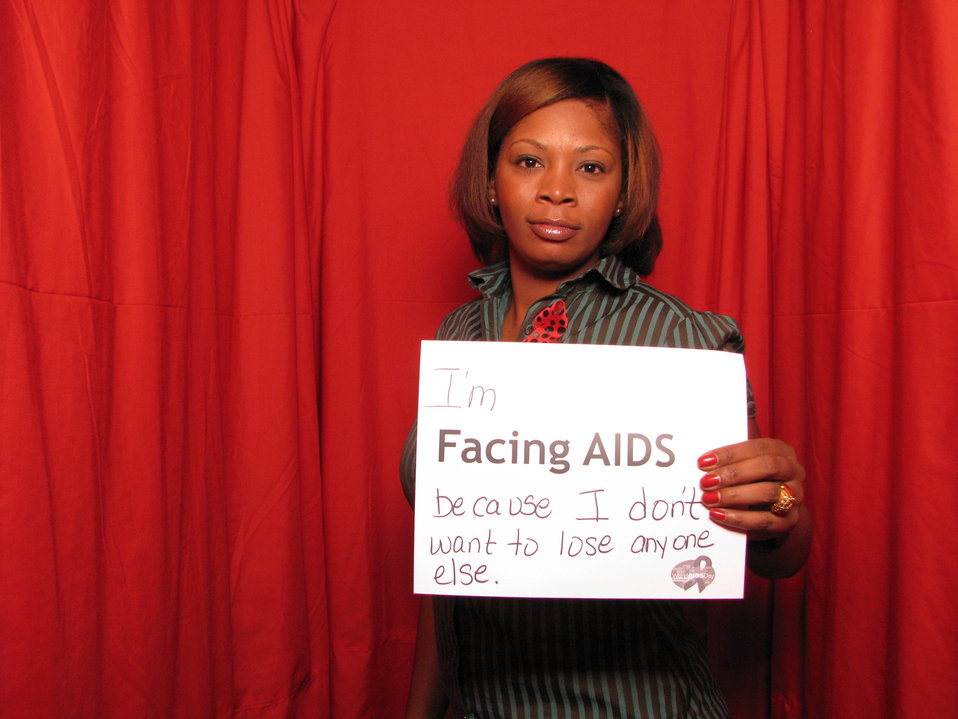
I'm FACING AIDS because I don't want to lose anyone else.

From the AIDS.gov photo booth at the U.S. Conference on AIDS, September 2010 (Orlando, FL).